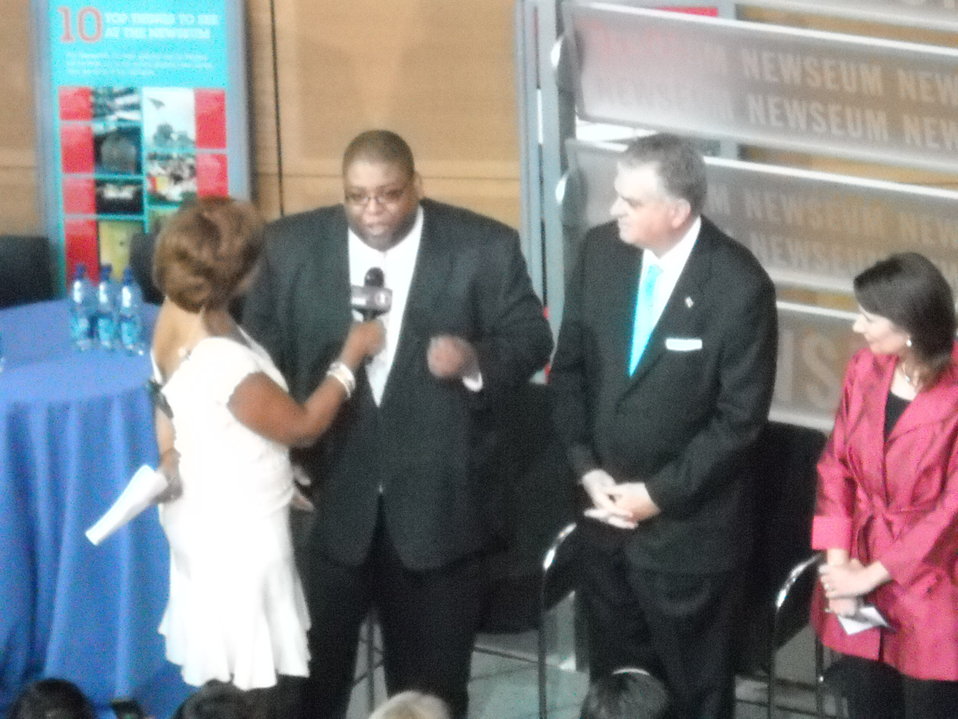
National No Phone Zone Day Newsum Washington, DC April 30, 2010 049